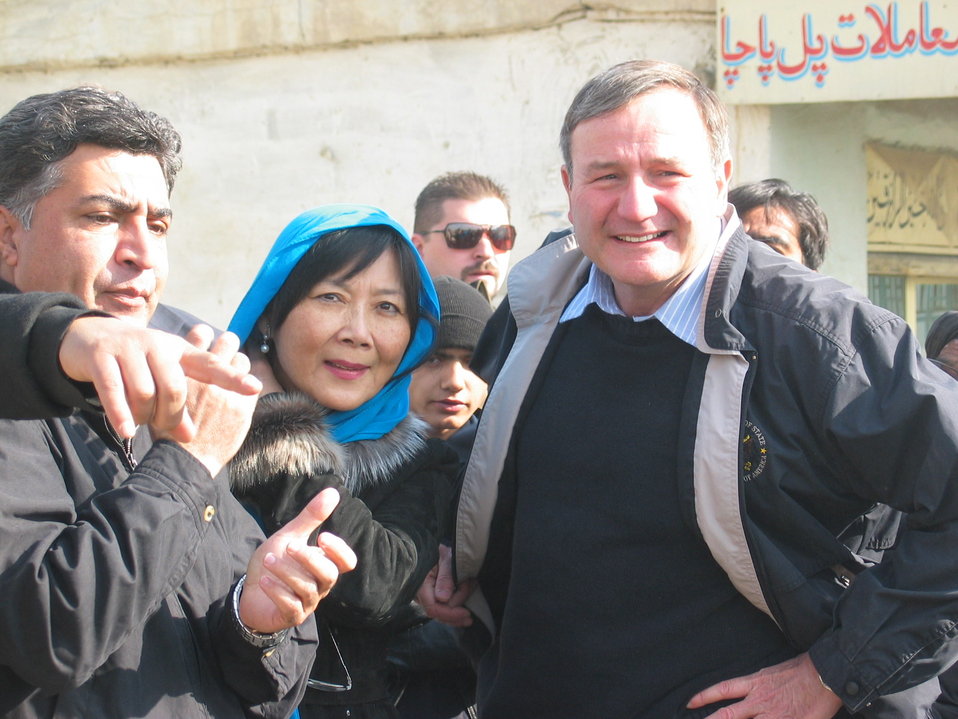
Kabul River Bridge Renovation, December 3, 2010